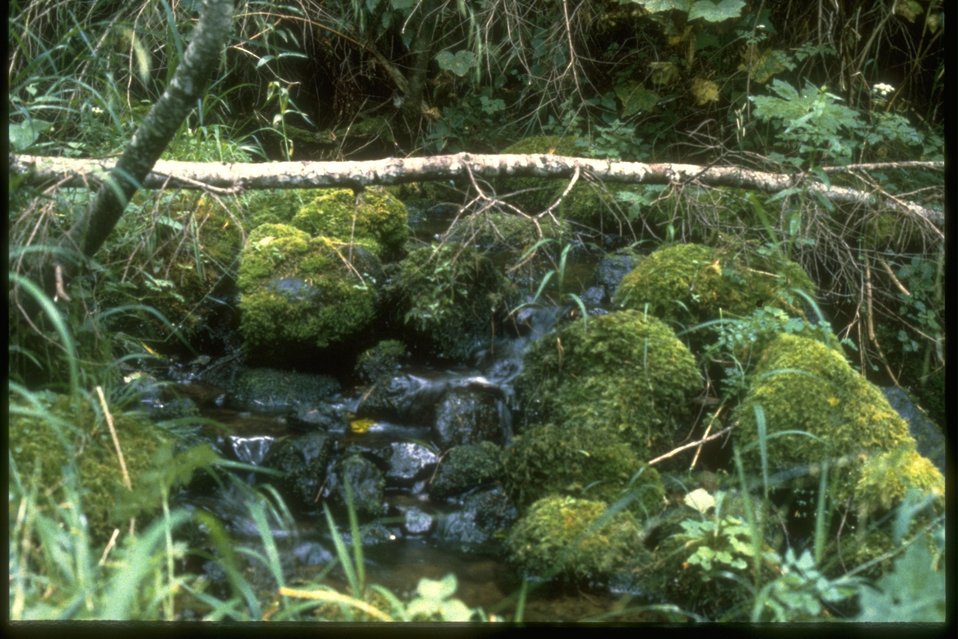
Mossy Rocks along a small creek.